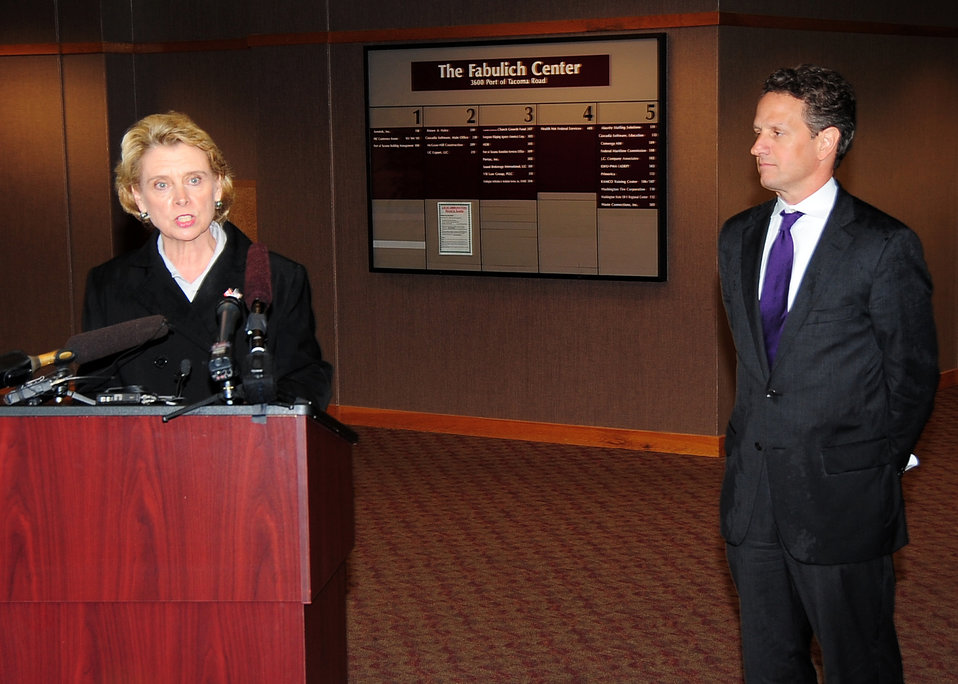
Tacoma, 5/18/2010

Secretary Geithner at a press conference at the Port of Tacoma with Governor Gregoire to discuss the importance of U.S. exports.